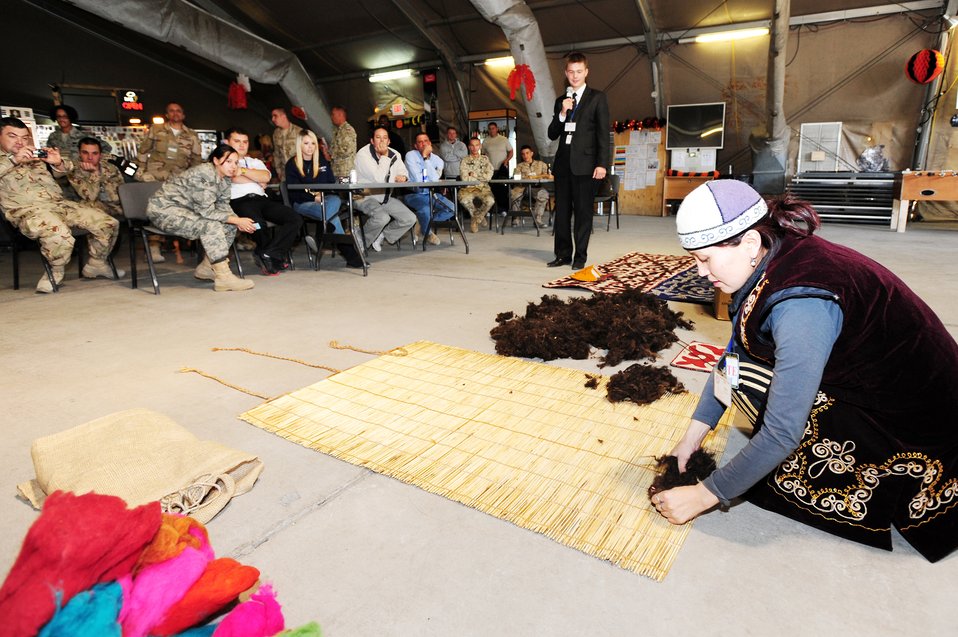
Airmen learn traditions during Kyrgyz Cultural Day

Traditional Kyrgyz carpet expert Fatima Aipova prepares a carpet from wool during a demonstration as part of Kyrgyz Culture Day at the Transit Center at Manas, Kyrgyzstan, recently.